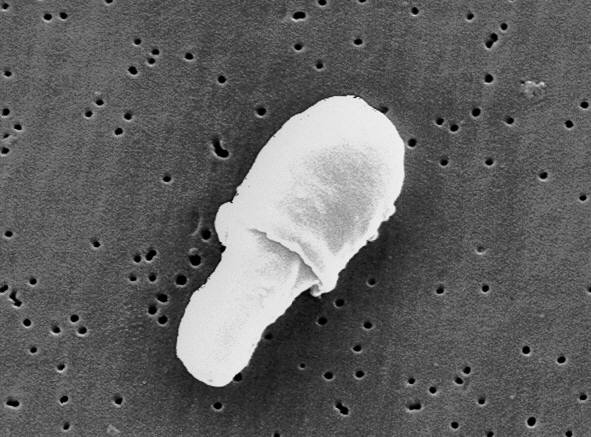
Scanning electron micrograph (SEM) of Malassezia specie.